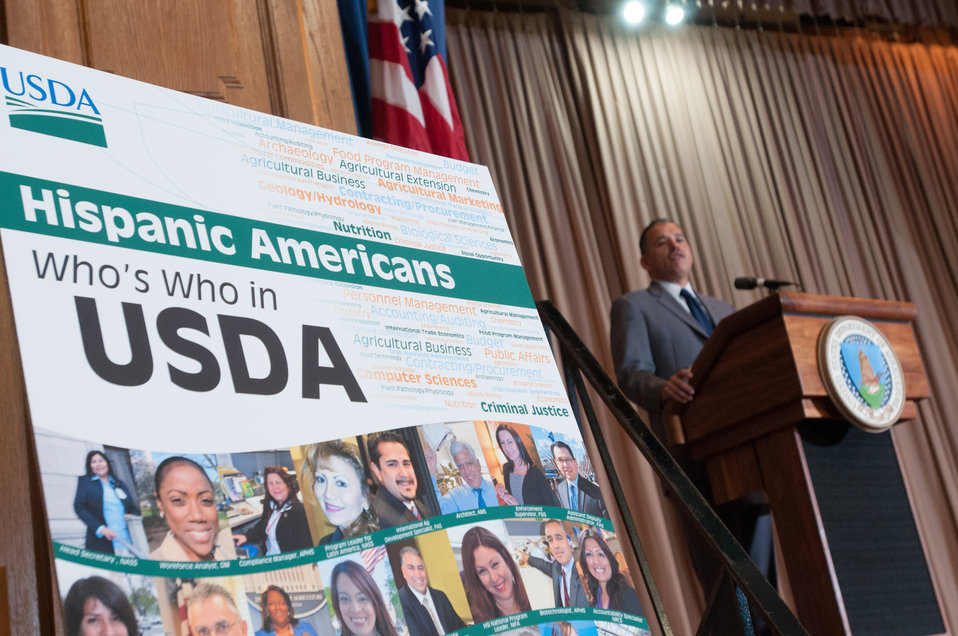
U.S. Department of Agriculture (USDA) Office of the Secretary, Deputy Chief of Staff Oscar Gonzales, Jr. made remarks on behalf of Secretary Thomas J. Vilsack, during the 2013 National Hispanic Heritage Month ”Hispanics: Serving and Leading our Nation with Pride and Honor,” on Thursday, Sept. 19, 2013, in the Jefferson Auditorium, USDA Headquarters, Washington, D.C.